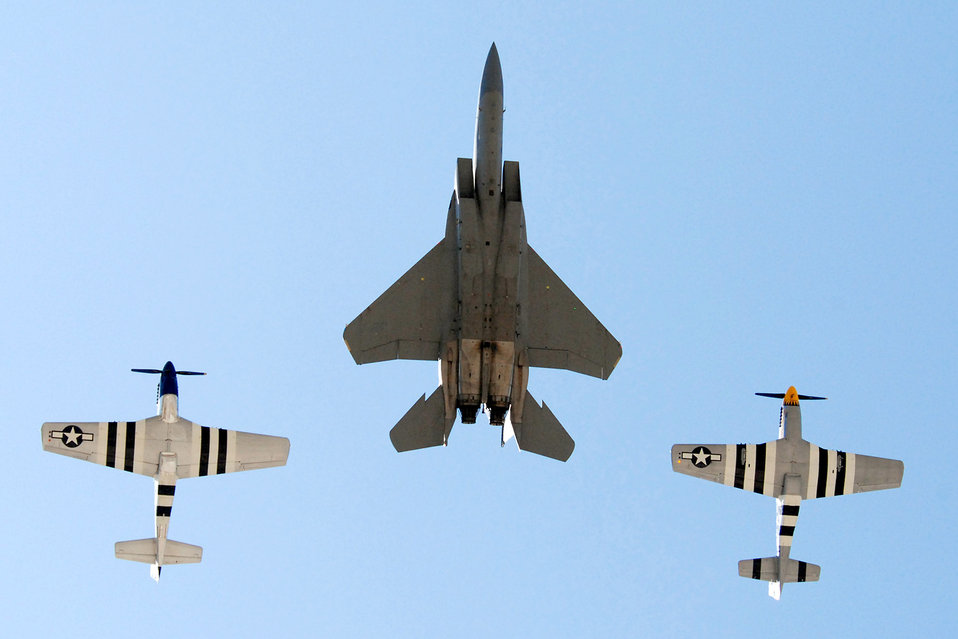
Up, up and away

An F-15 Eagle from the West Coast Demonstration Team and a pair of P-51 Mustangs fly in formation as part of a heritage flight May 1 at Eglin Air Force Base, Fla. This is the final demonstration show for the F-15C, completing a 26-year career that began in 1983.